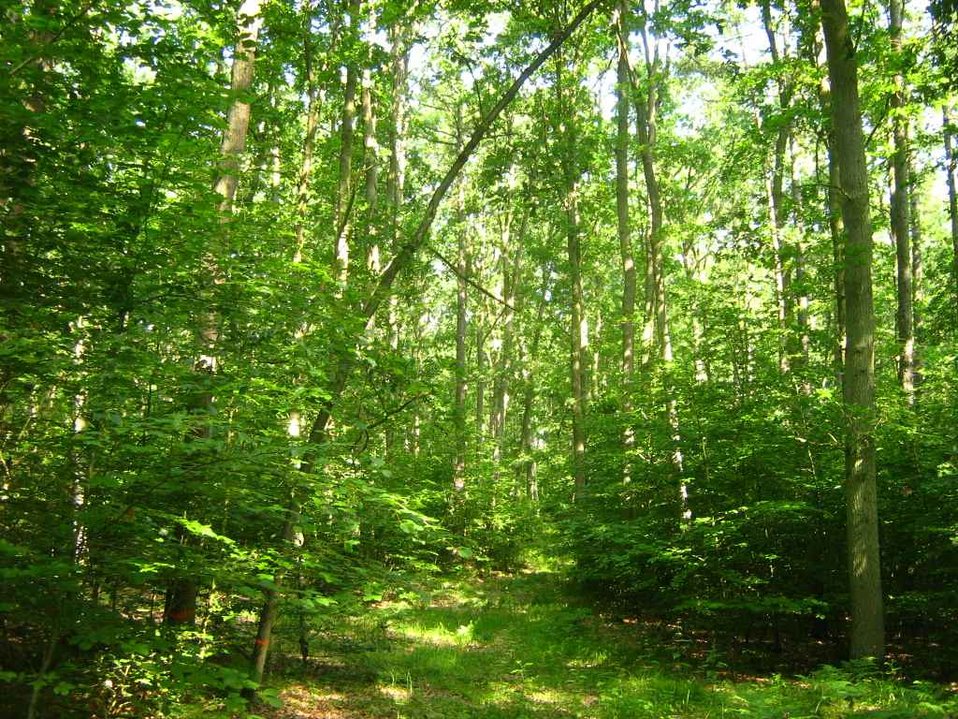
Deutsch: Eichenwald in der Ueckermünder Heide bei Rothemühl (Traubeneichen mit Rotbuchenunterstand.